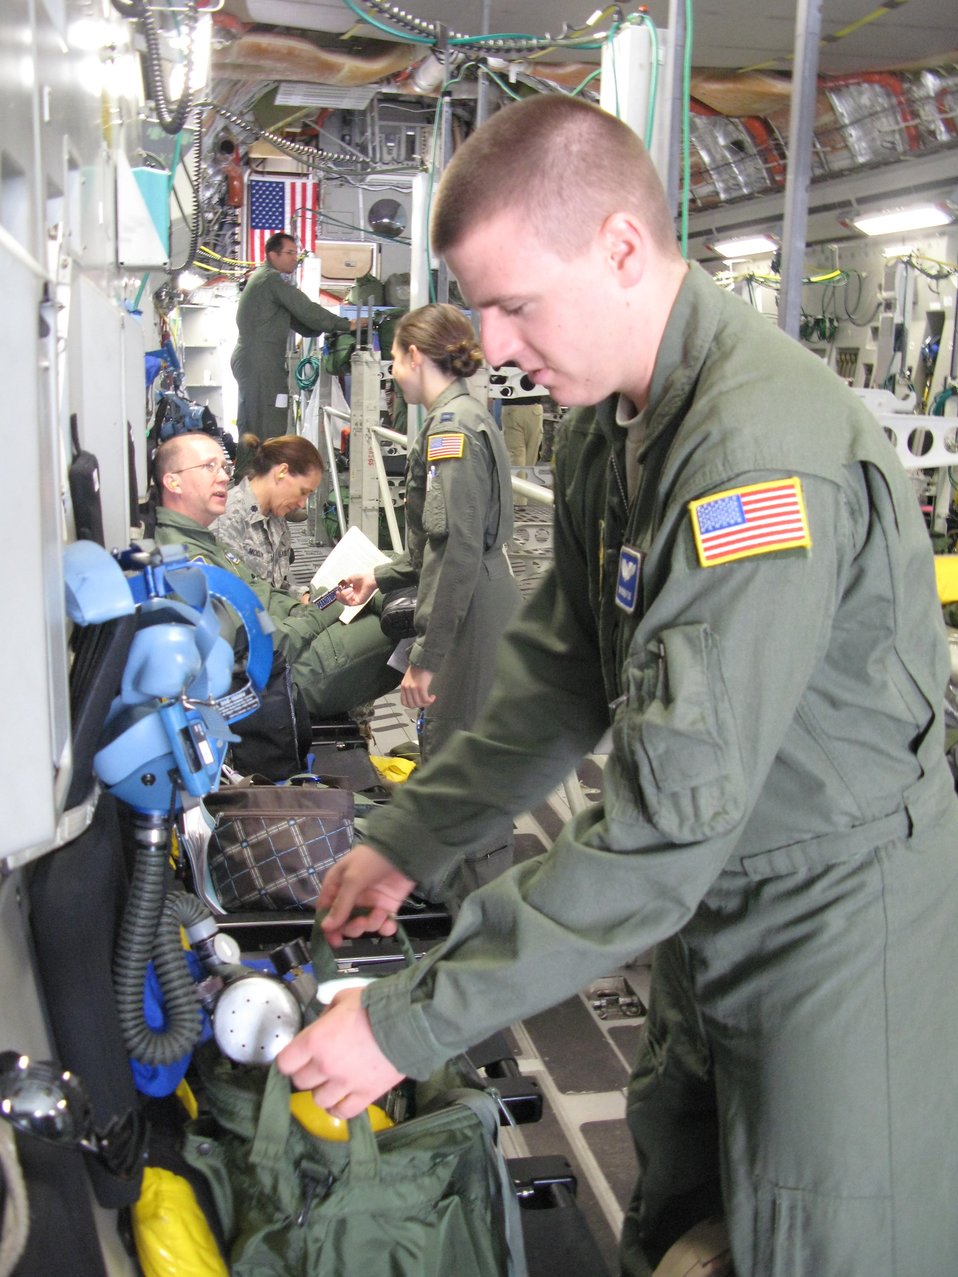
Air Force evacuation team carries wounded warriors home

Senior Airman Brian Fox prepares ventilation equipment for an aeromedical evacuation flight from Ramstein Air Base, Germany, to Andrews Air Force, Md., April 26, 2011.